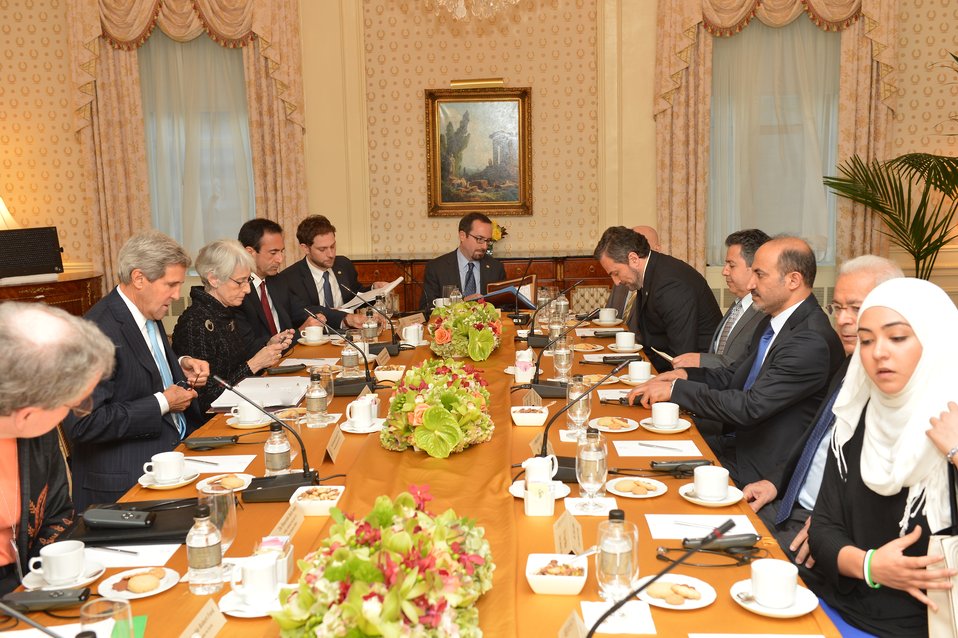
Secretary Kerry Meets With Syrian Opposition Coalition Chairman Ahmed Assi al-Jarba

U.S. Secretary of State John Kerry holds a bilateral meeting with Syrian Opposition Coalition Chairman Ahmed Assi al-Jarba in New York City on September 24, 2013.